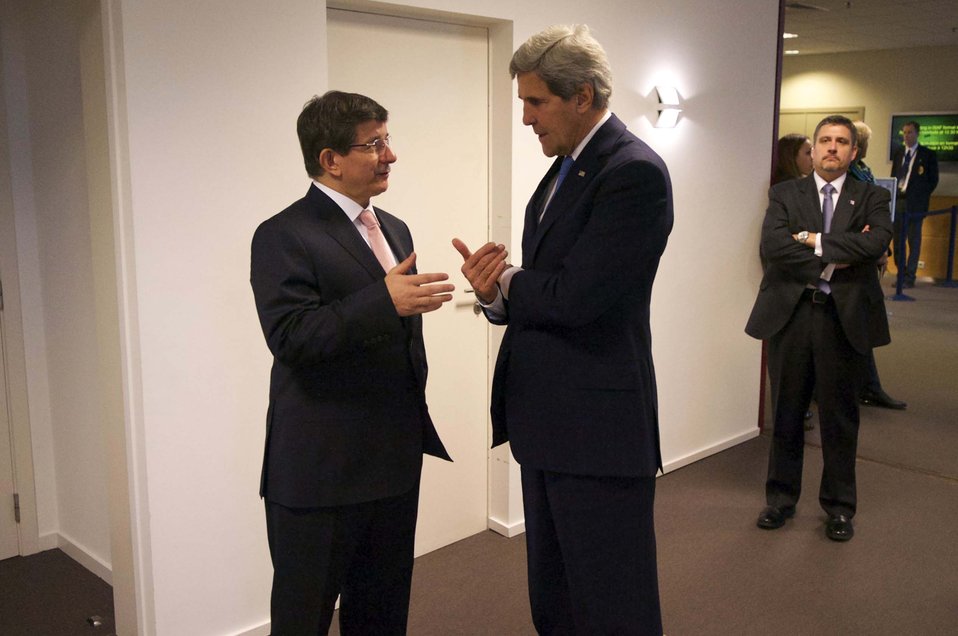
Secretary Kerry Chats With Turkish Foreign Minister Davutoglu

U.S. Secretary of State John Kerry chats with Turkish Foreign Minister Ahmet Davutoglu after a meeting to discuss the current and future security situation in Afghanistan at NATO Headquarters in Brussels, Belgium, on December 4, 2013.